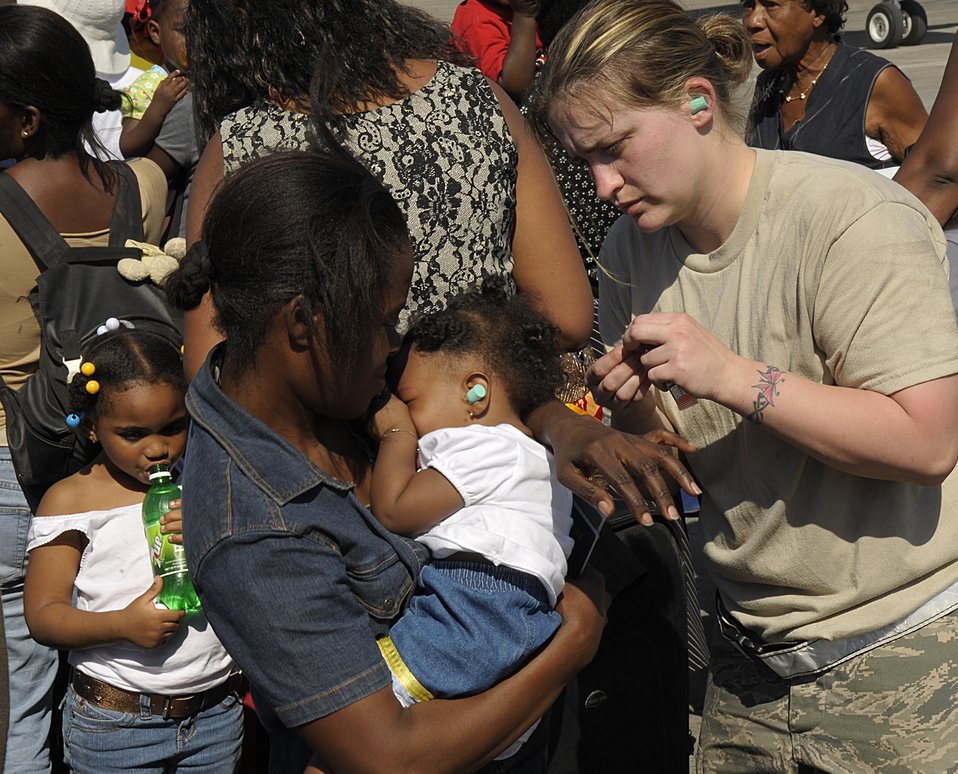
Haiti Earthquake Relief

An Airman places ear plugs in the ears of a toddler before boarding an C-130 Hercules aircraft flying out of the Toussaint L'Ouverture International Airport in Port-au-Prince, Haiti, Jan. 15, 2010. The Airman is assigned to the Air Force Special Operations Command at Hurlburt Field, Fla.